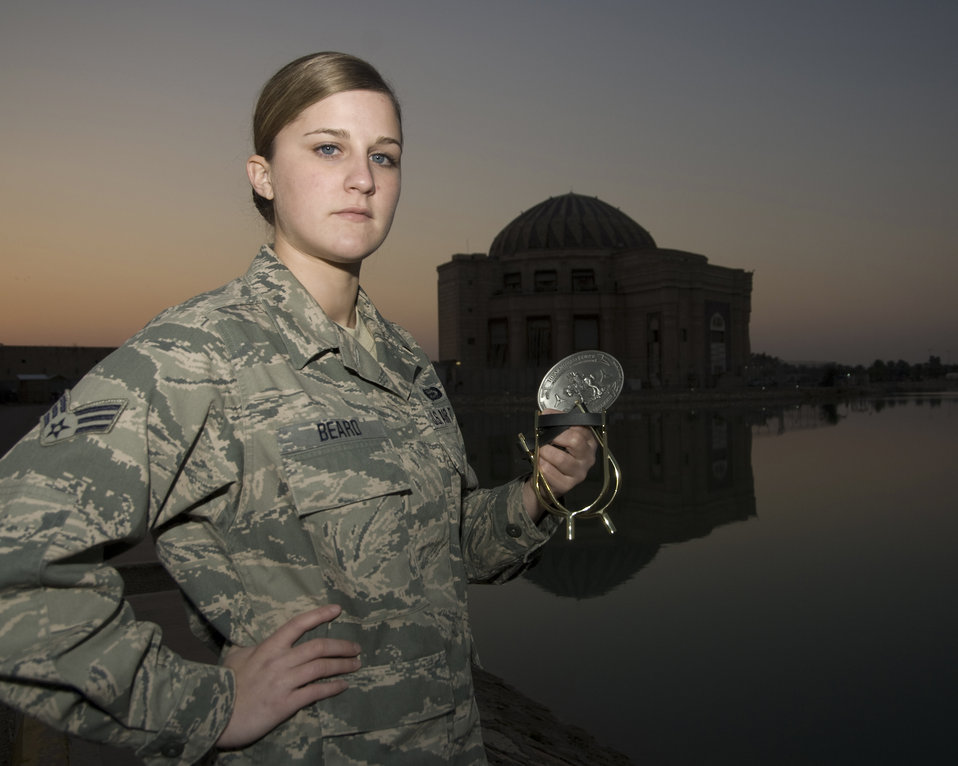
Spur Ride

Senior Airman Courtney Beard with her spurs and III Corps belt buckle Jan. 16, 2010, on Camp Slayer, Iraq. Airman Beard was the first female Airman to complete the 18-hour Spur Ride, a series of mental and physical tests, held by the III Corps, Task Force Phantom. Airman Beard is a 467th Expeditionary Intelligence Squadron intelligence analyst.